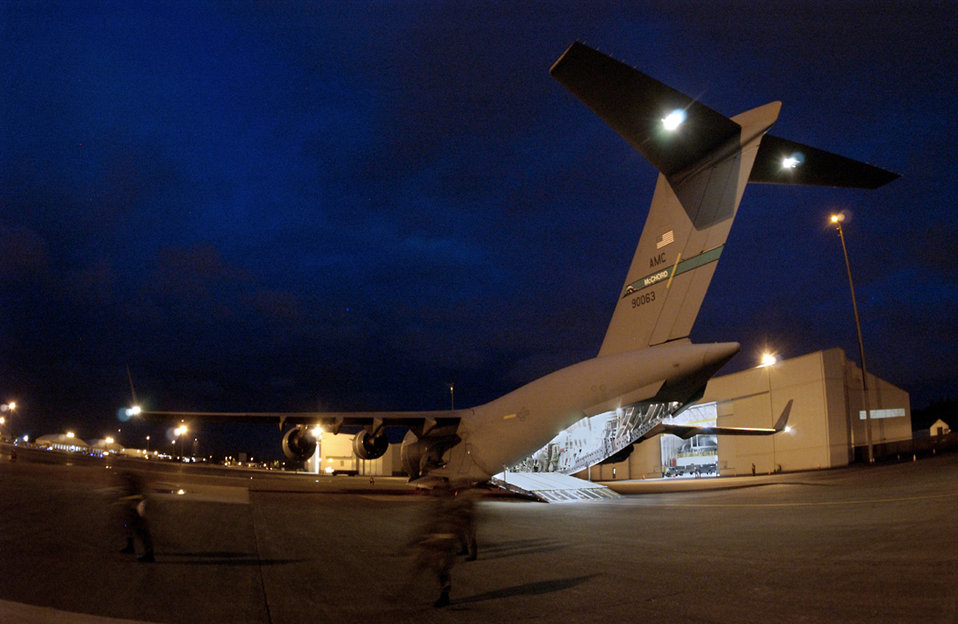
A day at the Rodeo

MCCHORD AIR FORCE BASE, Wash. -- A C-17 Globemaster III is prepared for flight June 21 during Rodeo 2005. Flight crews from around the world have gathered here to compete in such events as airlift, airdrops and medical evacuation.